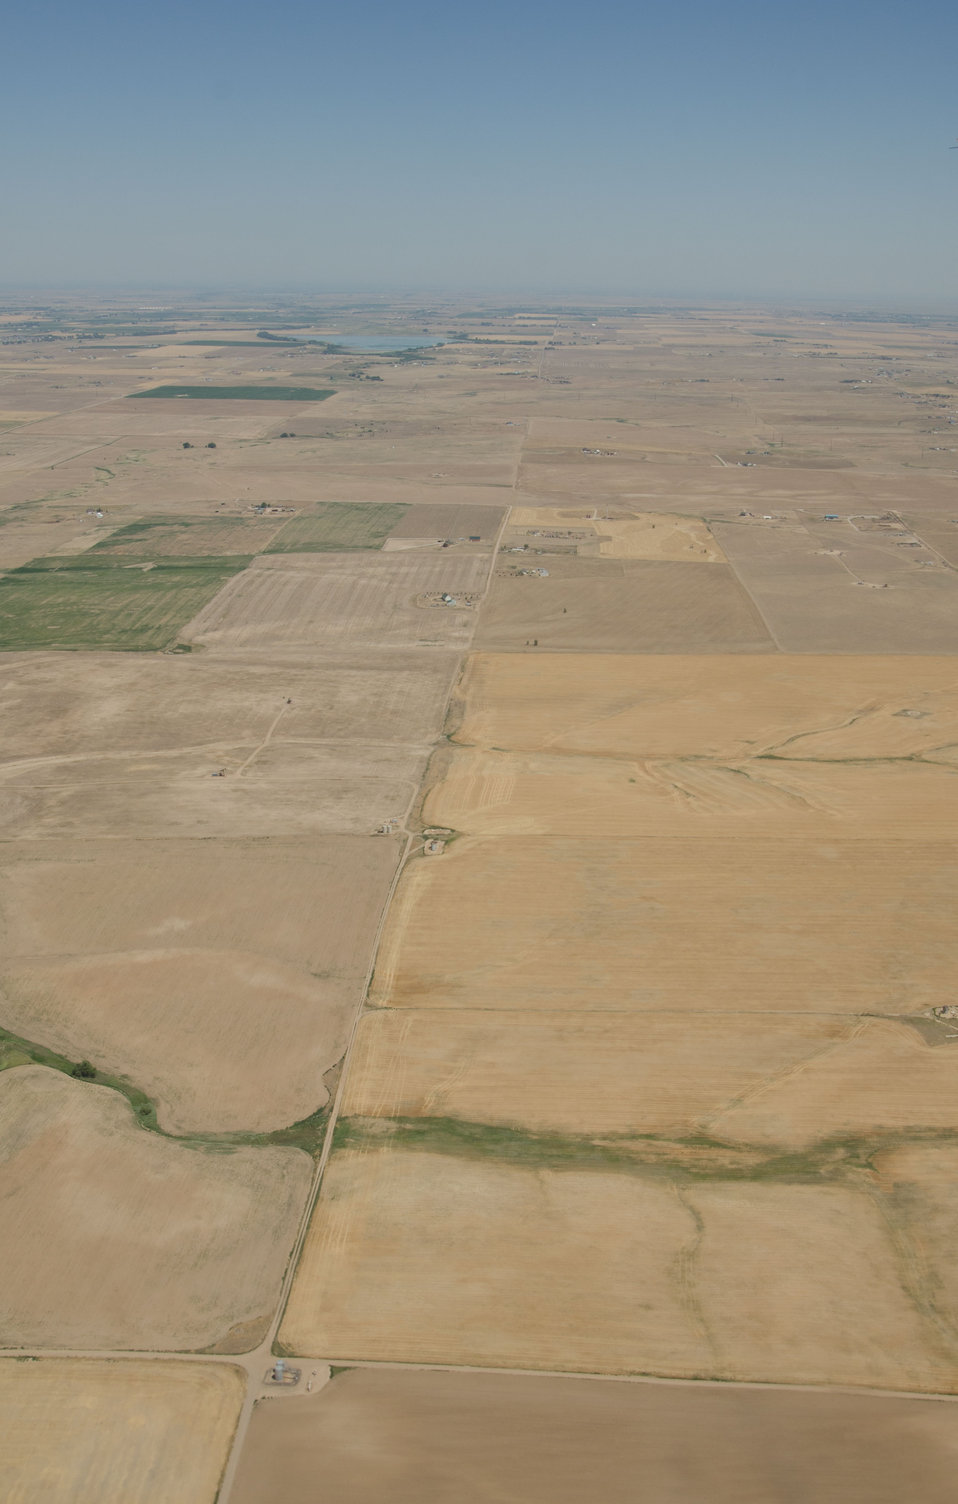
Aerial views of Colorado farm lands east of Denver International Airport.